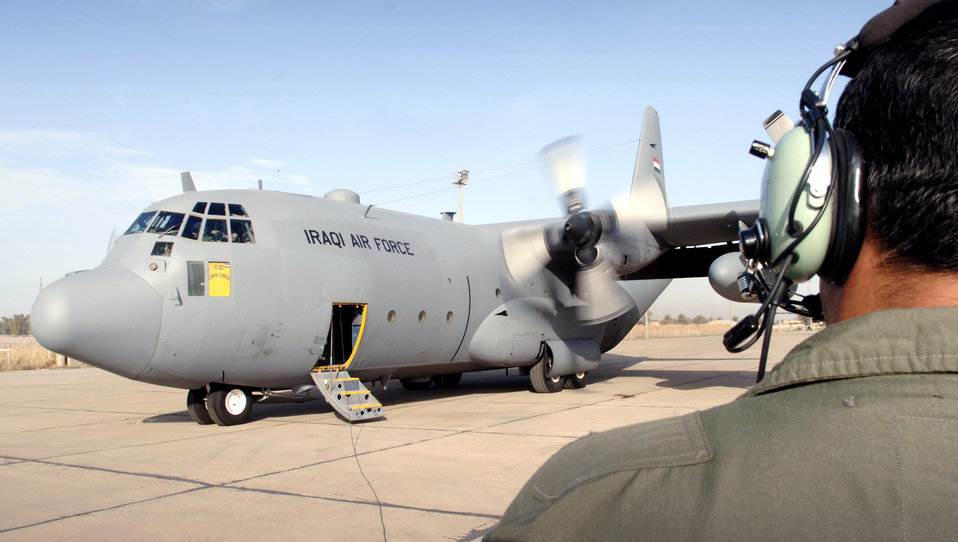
Iraqi Air Force spreads its wings

An Iraqi loadmaster monitors the engine start-up of a C-130E Hercules at New Al-Muthana Air Base, Baghdad, Iraq. This is one of three cargo aircraft given to the Iraqi Air Force from the United States to build the first Iraqi Air Force squadron since the rebuilding of Iraq.